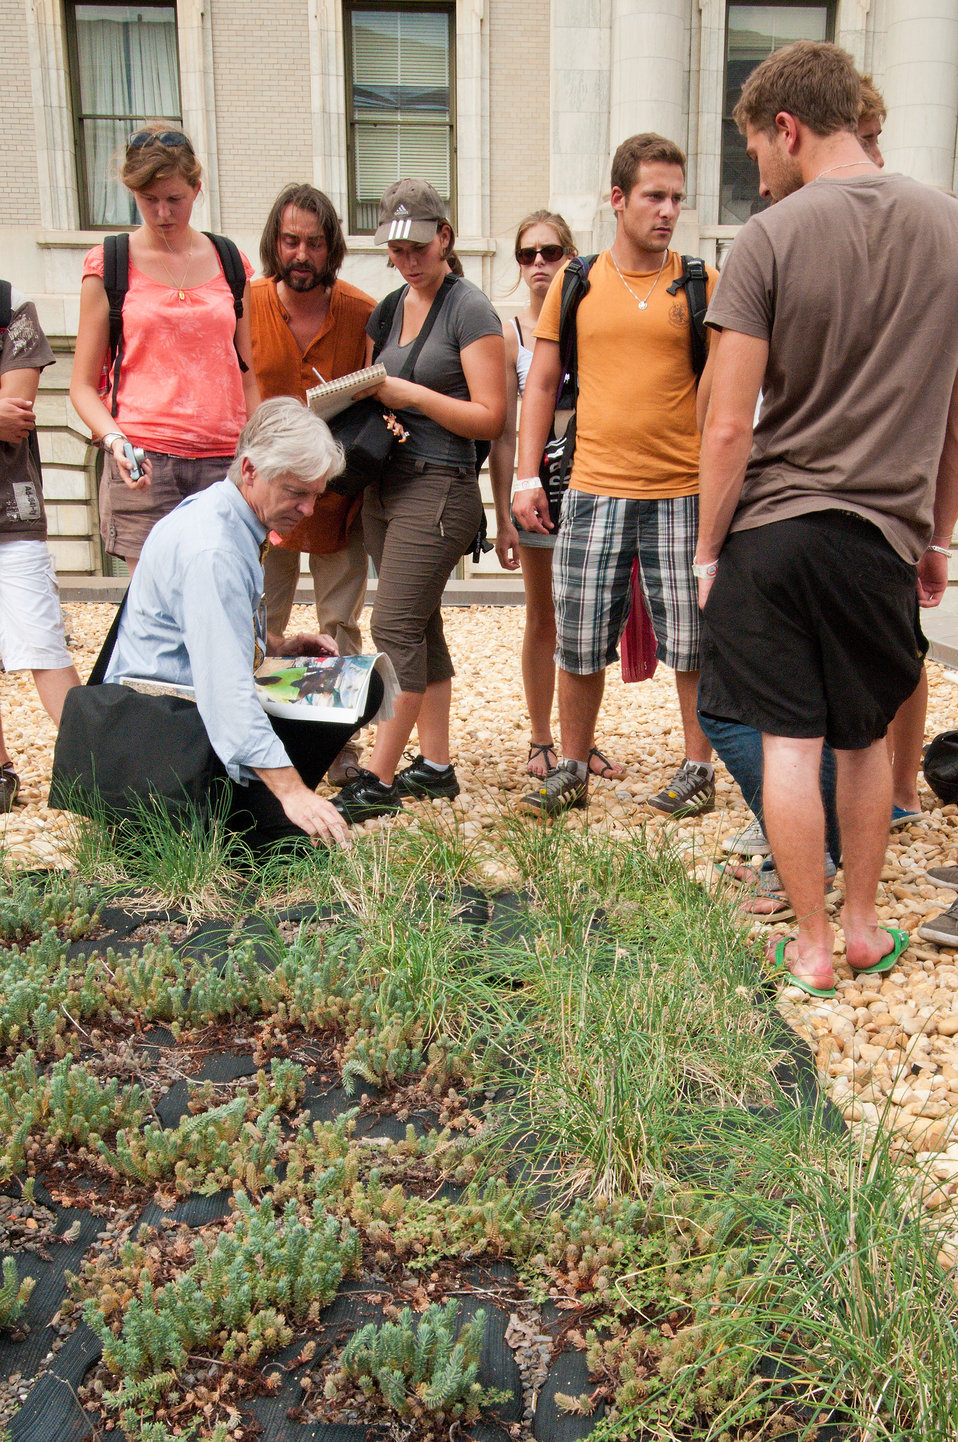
USDA National Landscape Architect, Natural Resources Conservation Service Bob Snieckus (kneeling), demonstrates the construction of one of the green roofs the United States Department of Agriculture has planted to French students from Ecole Du Breuil, School of Horticulture and Landscaping Techniques of Paris, France. The students visited the United States Department of Agriculture People’s Garden in Washington, D.C., on Tuesday, September 4, 2012. The class was lead by Professor Hervé Dardillat (center), Landscape Architect. The students are on a two-week U.S. tour, which includes a visit to the White House Kitchen garden, as well as gardens and parks in Washington, D.C. The students will also visit Temple University in Philadelphia, PA., in addition to parks and gardens in New York City where they will also stay with host families and work on community gardens.